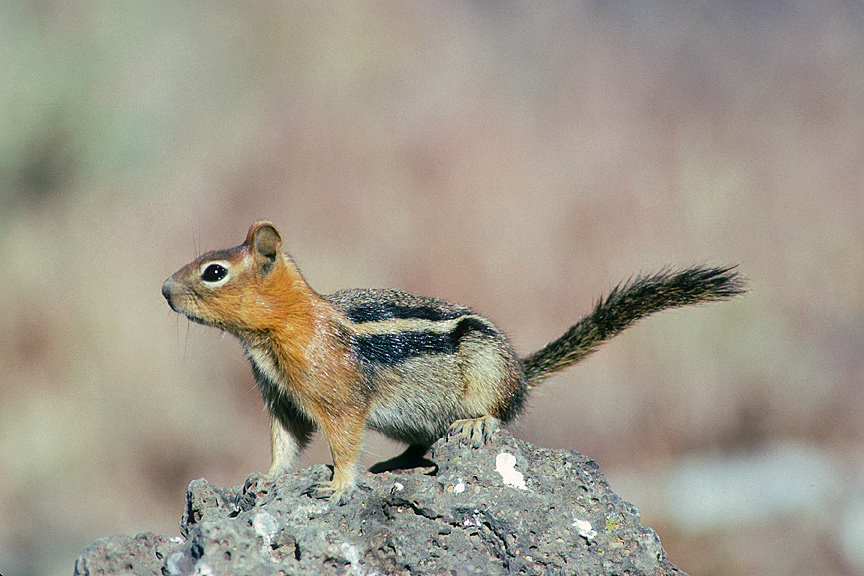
Ground Squirrel at Tule Lake NWR